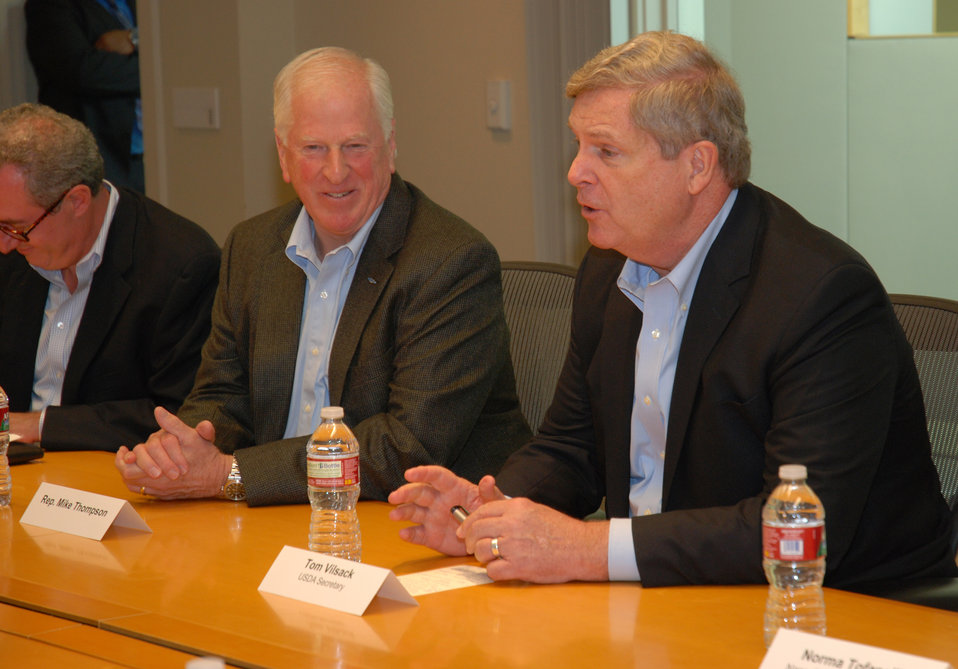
(L to R) U.S. Trade Representative Michael Froman, Congressman (CA) Mike Thompson, and Agriculture Secretary Thomas Vilsack hold a roundtable discussion with California wine growers Mondavi Winery in Napa, CA on Sunday, Nov. 17, 2013.